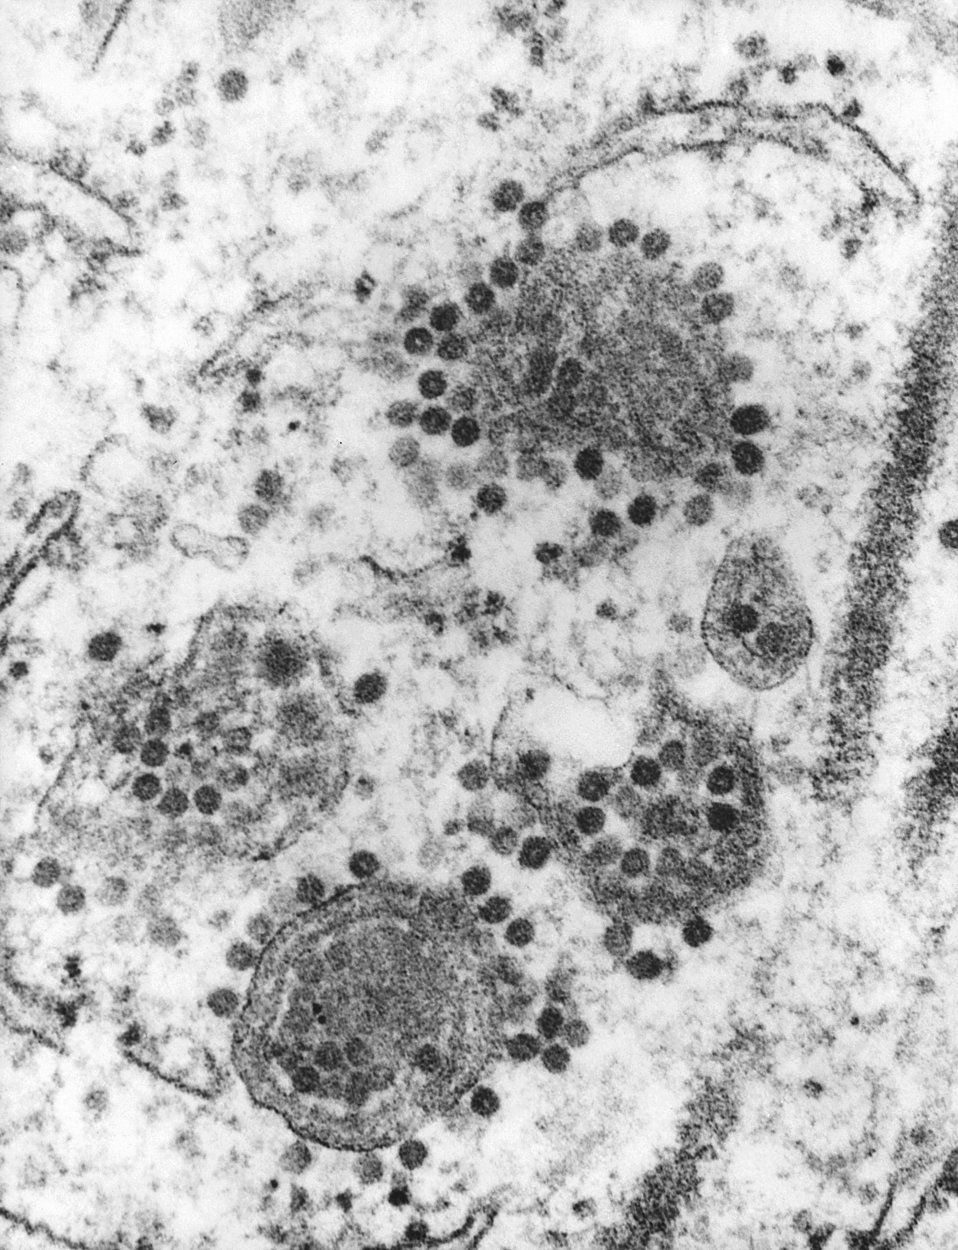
This 1975 transmission electron micrograph (TEM) revealed the presence of a number of Eastern Equine Encephalitis (EEE) virus virions that happened to be in a specimen of central nervous system tissue. EEE is an zoonotic arbovirus, which means that it's spead to human beings through the bite of an infected mosquito. EEE virus (EEEV) occurs in the eastern half of the United States where it causes disease in humans, horses, and some bird species. Because of the high mortality rate, EEE is regarded as one of the most serious mosquito-borne diseases in the United States. EEE is a Togaviridae virus family member, and the genus Alphavirus.